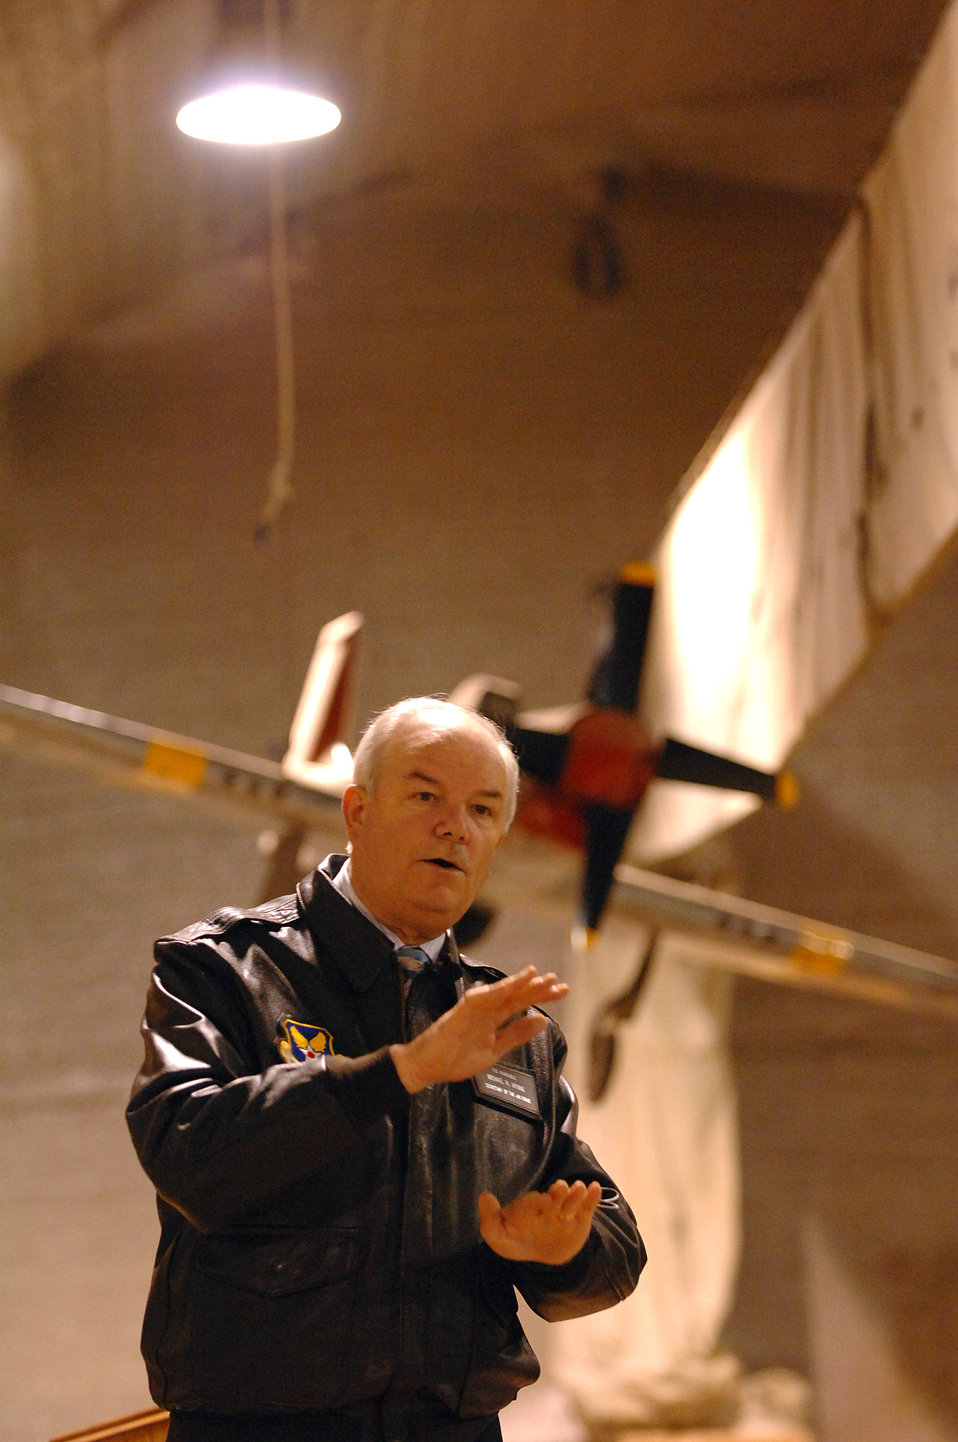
SECAF Visits Balad

Secretary of the Air Force Michael Wynne speaks in front of an audience of Airmen here, Feb. 2. The secretary visited many facilities and offices here before conducting an Airman's Call where he stressed the importance of honoring the heritage of the Air Force and the legacy set forth by the Tuskegee Airmen.